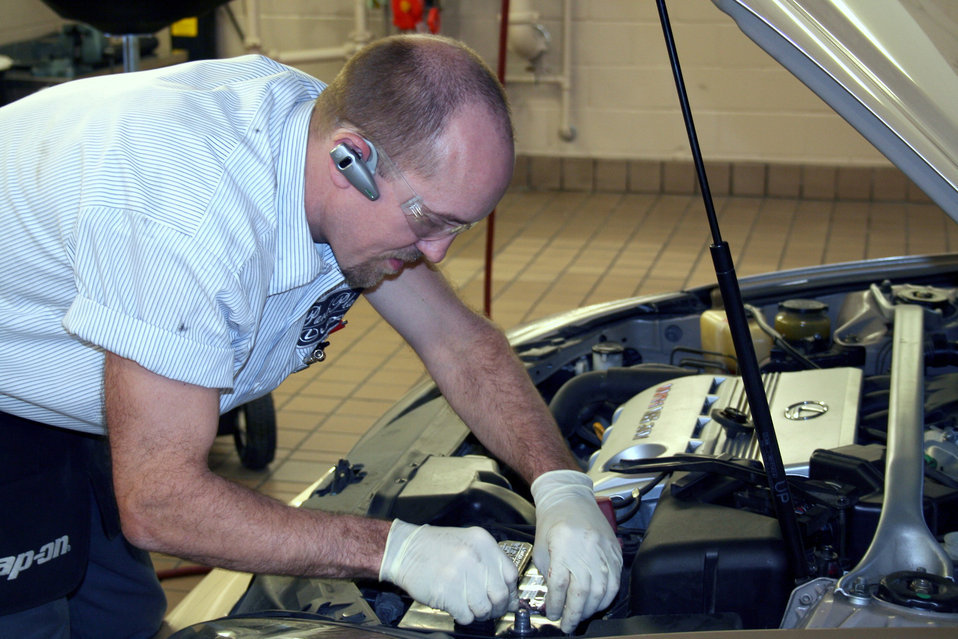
2005 Baldrige Award Winner, Park Place Lexus